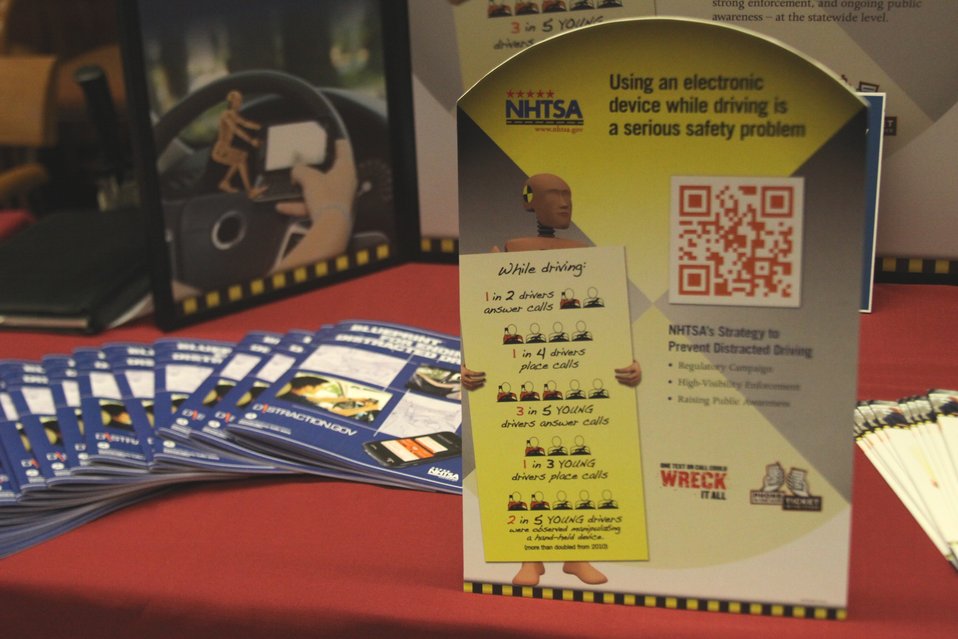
Distracted Driving Technology Showcase April 19, 2013